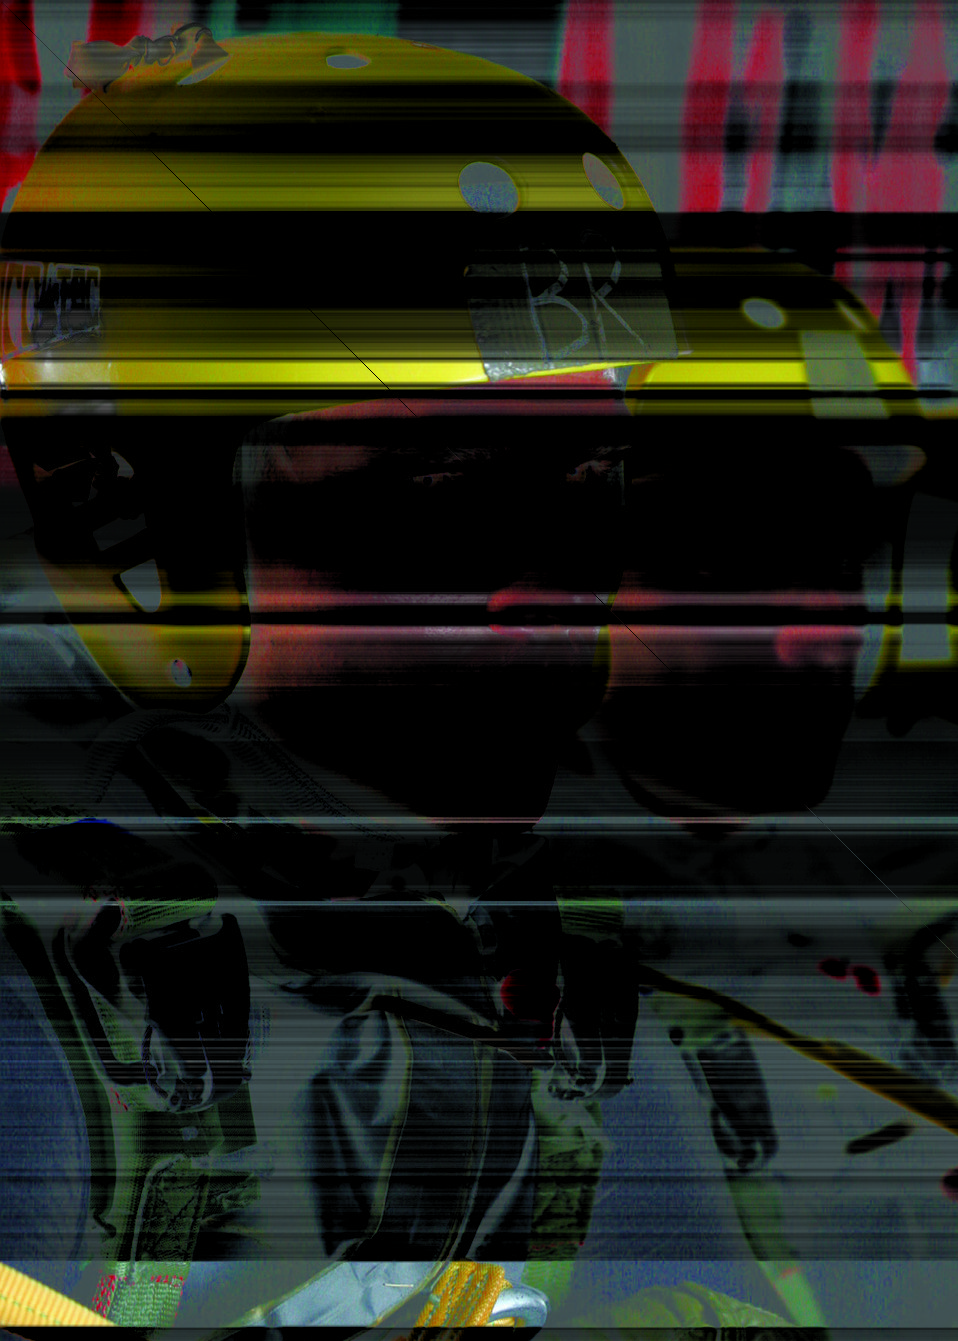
Trainees to PJs

Airmen 1st Class Brian Bair and Nicholas Gibson, pararescue trainees from the 342nd Training Squadron onboard a 920th Rescue Wing HC-130, wait for the order to jump during the water jump portion of Air Operations training Oct. 13. Twenty trainees and 13 instructors participated in this training at Patrick Air Forcc base, Fla., Oct. 13.